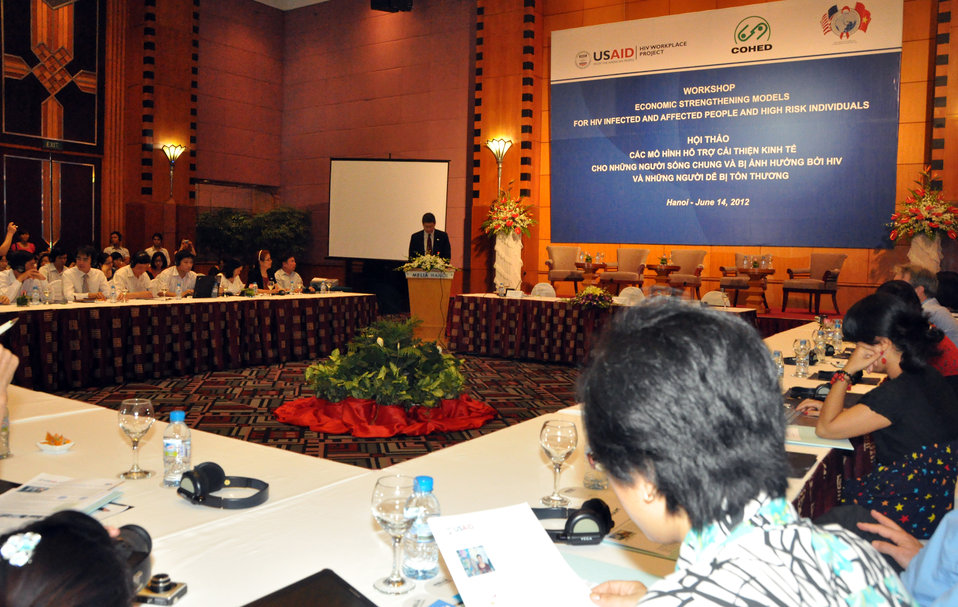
Microfinance Plan for People at Risk or Affected by HIV Found Sustainable

USAID supported a pilot model for microfinance, including credit, savings and insurance, for people living with or affected by HIV or those at high risk of becoming infected. After one year, the model has been found to be successful, replicable, and sustainable.